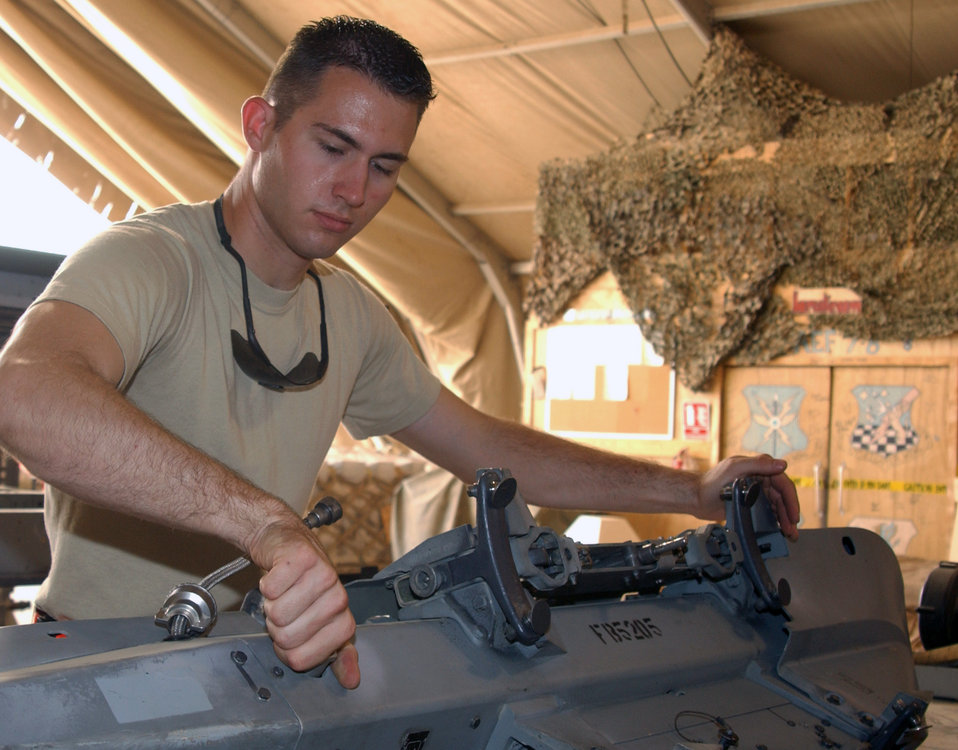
Security forces Airmen step outside the wire

Staff Sgt. Dwayne Pyle prepares a Humvee to be towed during battle drills performed before each mission in July at Contingency Operating Base Speicher, Iraq. Sergeant Pyle, assigned to the 732nd Expeditionary Security Forces Squadron Det. 1, performs duties on a police transition team, and the drills are designed to simulate any possible situation the team may encounter while conducting missions outside the wire. This particular drill came in handy a few days later when a Humvee struck an improvised explosive device and had to be towed back to base. The police transition team's goal is to help the Iraqis establish a functioning, independent police force.